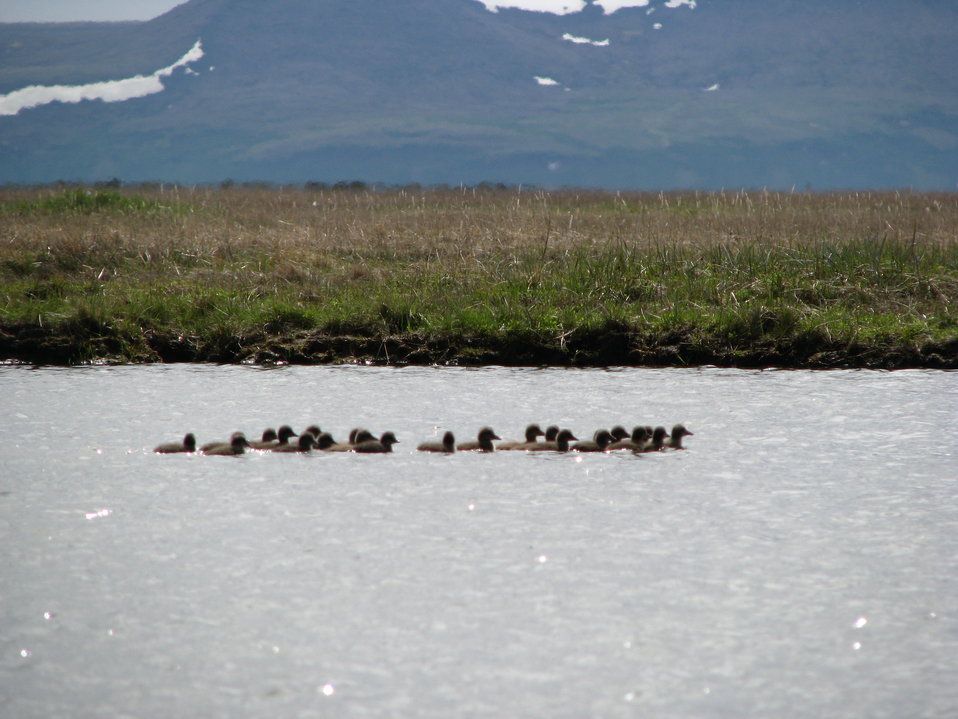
Ducklings!!

USFWS Yukon Delta NWR
A group of common eider ducklings